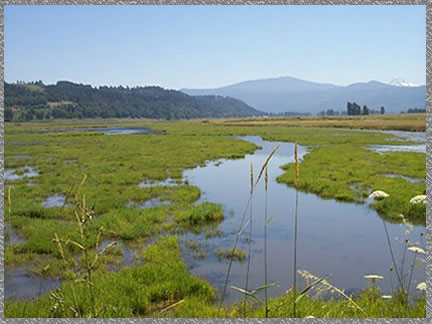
Wetlands - Steigerwald Lake NWR

Semi-permanent wetlands and historic riverine floodplain habitat populate the Steigerwald Lake NWR, which is located along the Columbia River.